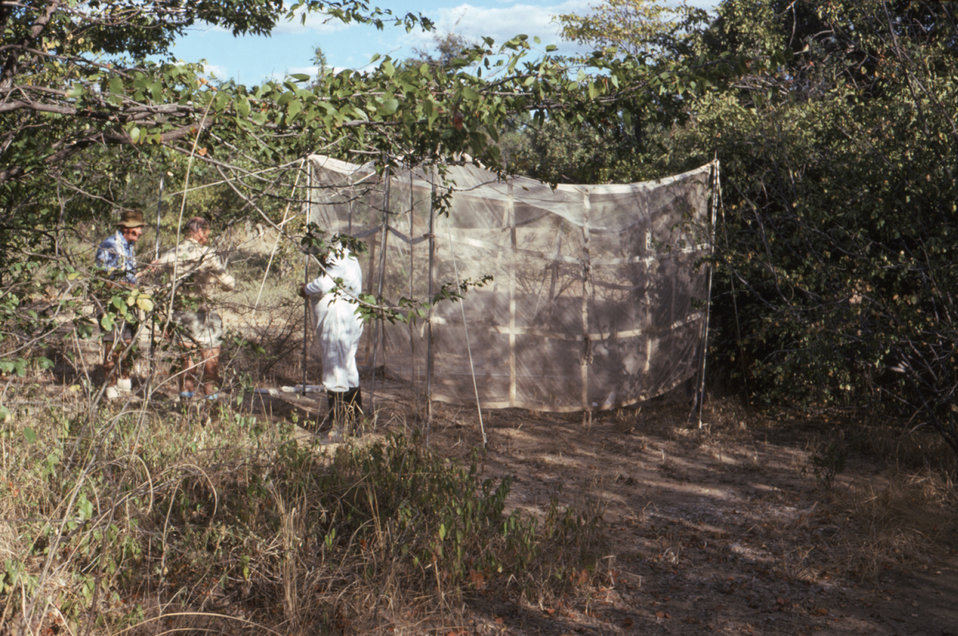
These were epidemiologic field investigators photographed during a 1975 Marburg virus investigation in Wankie, Rhodesia (now Zimbabwe).